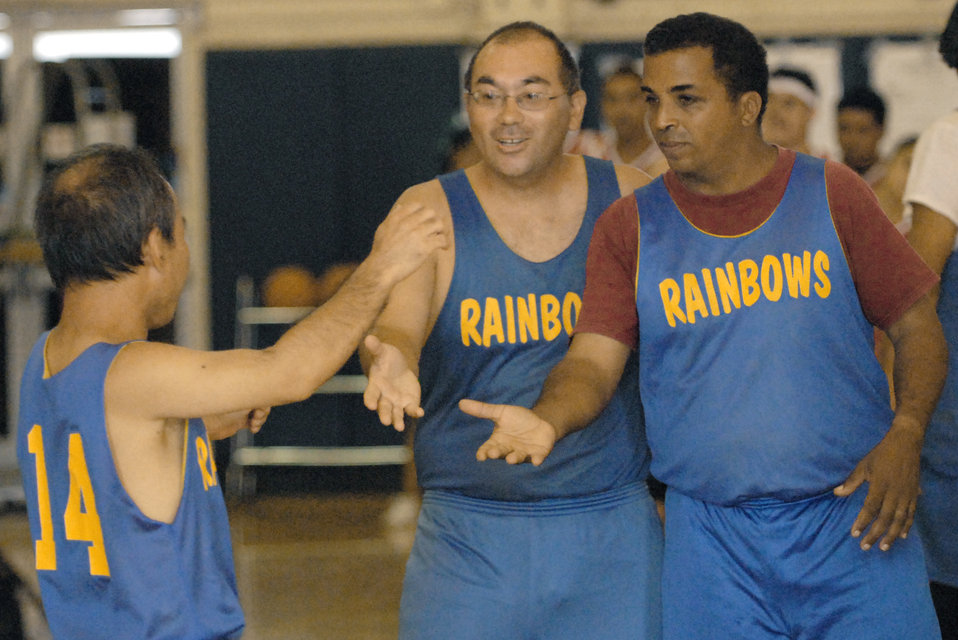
Special Olympics Rainbows basketball team members share a moment of camaraderie during a game Dec. 4, 2010, at Joint Base Pearl Harbor-Hickam, Hawaii.